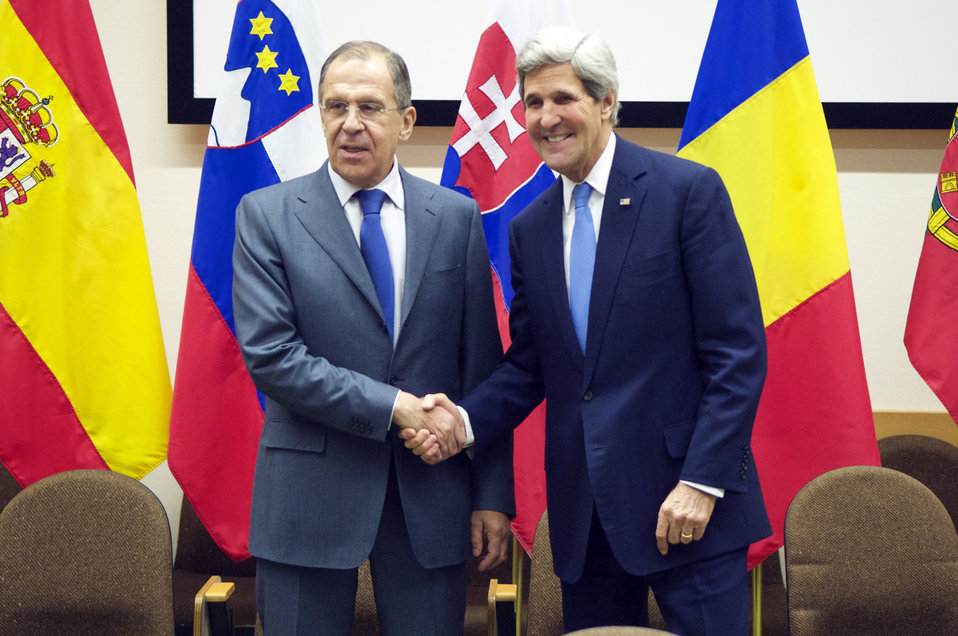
Secretary Kerry Poses for a Photo With Russian Foreign Minister Lavrov

U.S. Secretary of State John Kerry poses for photographers with Russian Foreign Minister Sergey Lavrov before a bilateral discussion on the margins of a NATO Ministerial meeting at NATO Headquarters in Brussels, Belgium, on December 4, 2013.